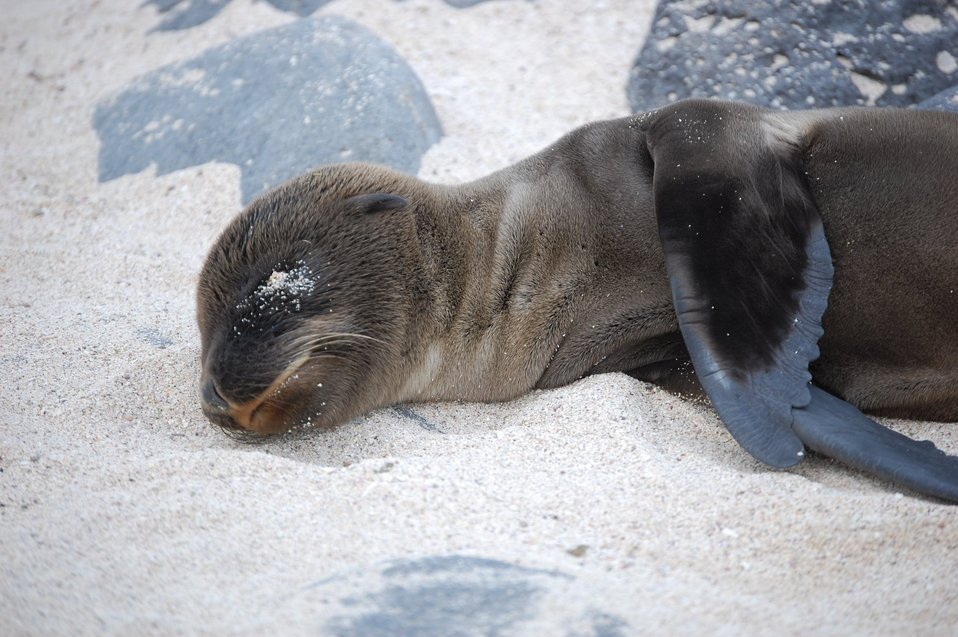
Sea lion.